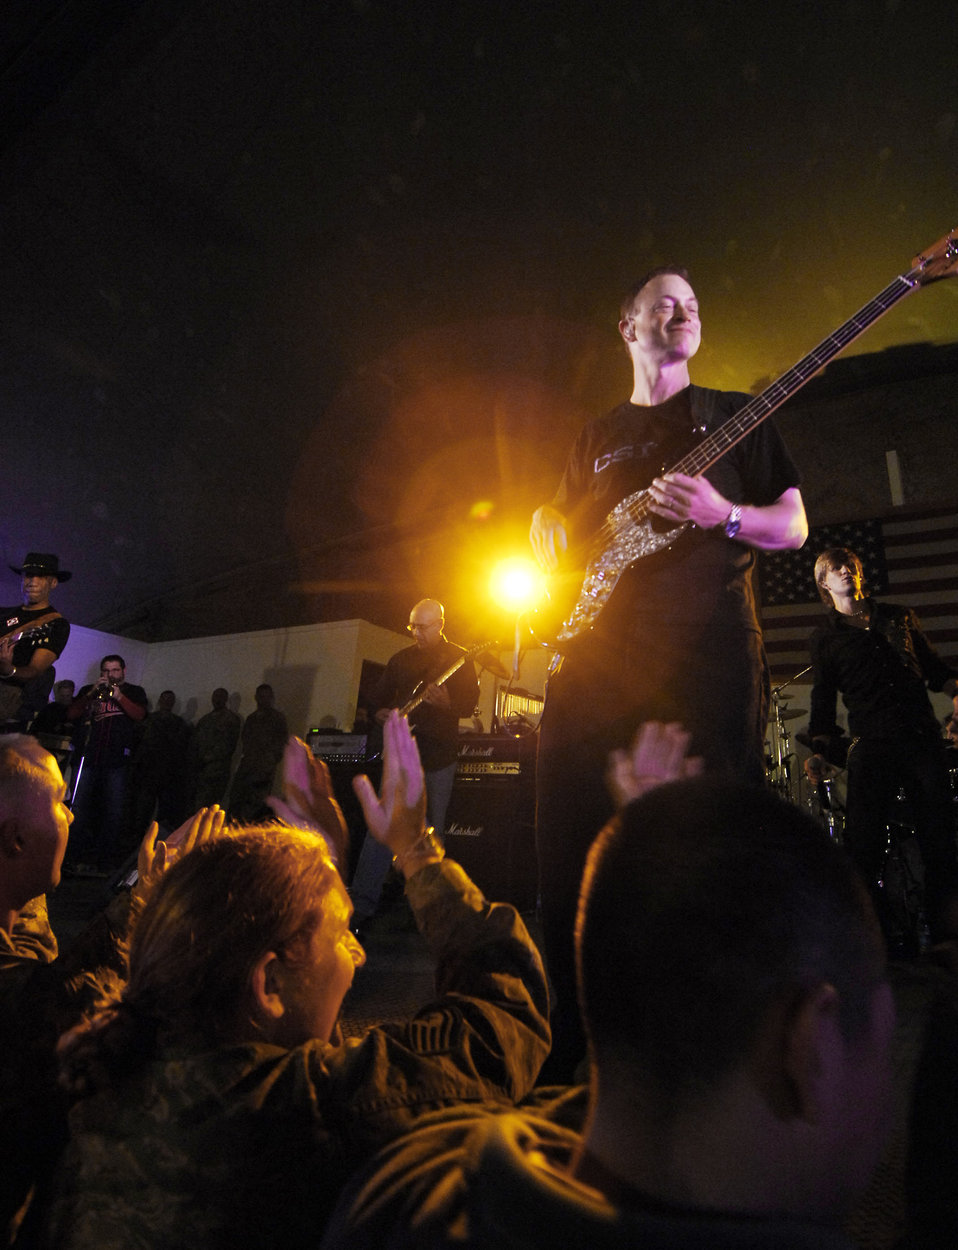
Celebrities thank troops at Thanksgiving concert

The Lieutenant Dan Band performs for troops Nov. 23, 2009, at Bagram Airfield, Afghanistan.